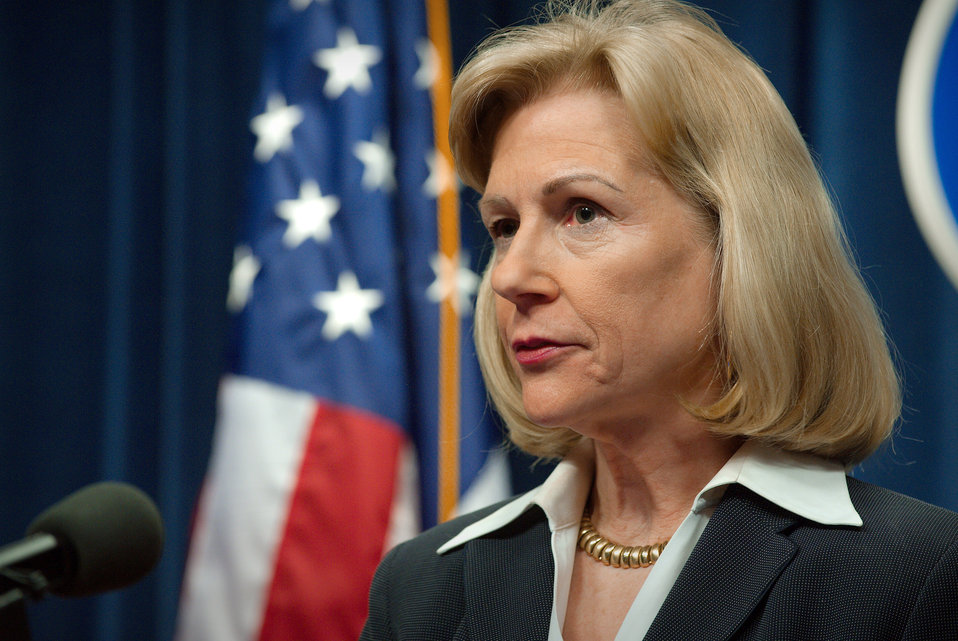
This 2009 photograph depicts the Chief of the Influenza Branch for the National Center for Infectious Diseases, Nancy Cox, Ph.D., at the podium during a Centers for Disease Control (CDC) press briefing held in order to discuss an update in the investigation of cases of swine influenza in California and Texas. CDC issued an MMWR dispatch on Tuesday, April 21, 2009. This briefing updated information included in the dispatch.